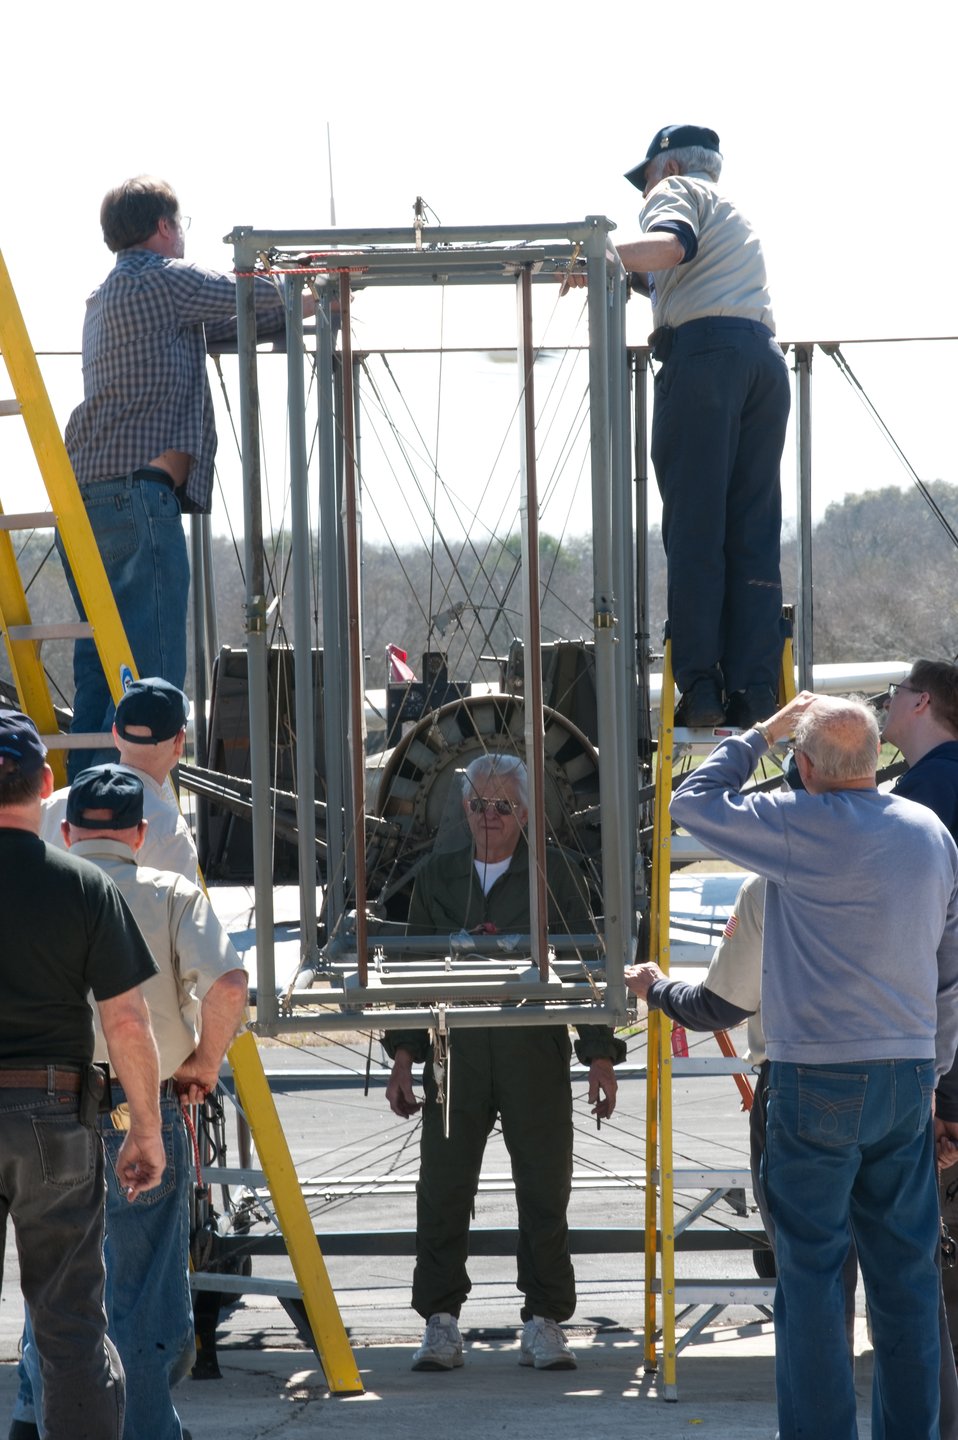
Wright